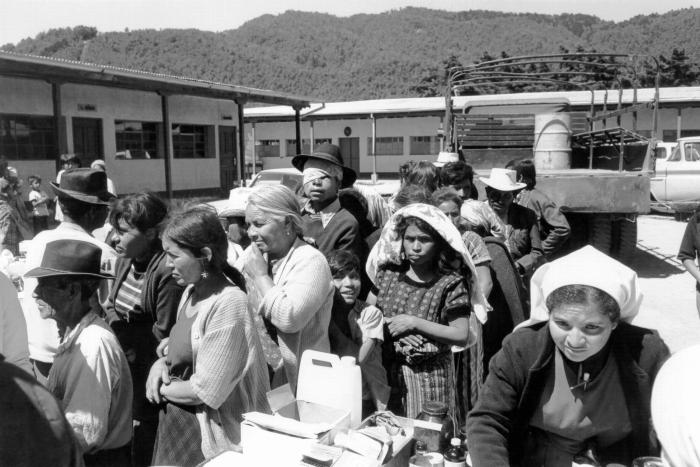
This image depicts the homeless residents of the Guatemalan town of Tecpan, taken after a devastating earthquake in 1976.